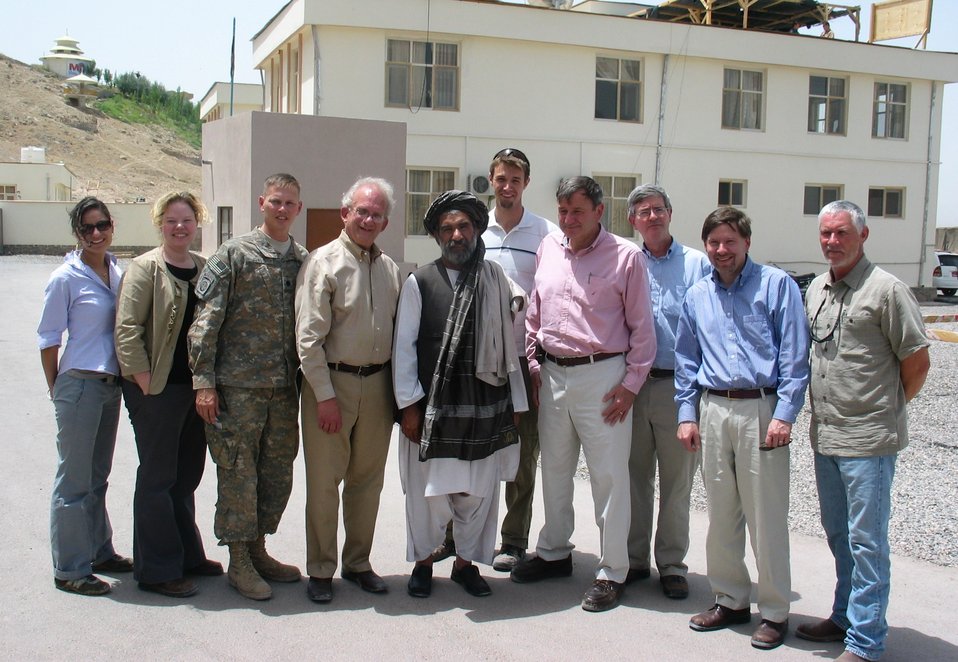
CODEL Berman